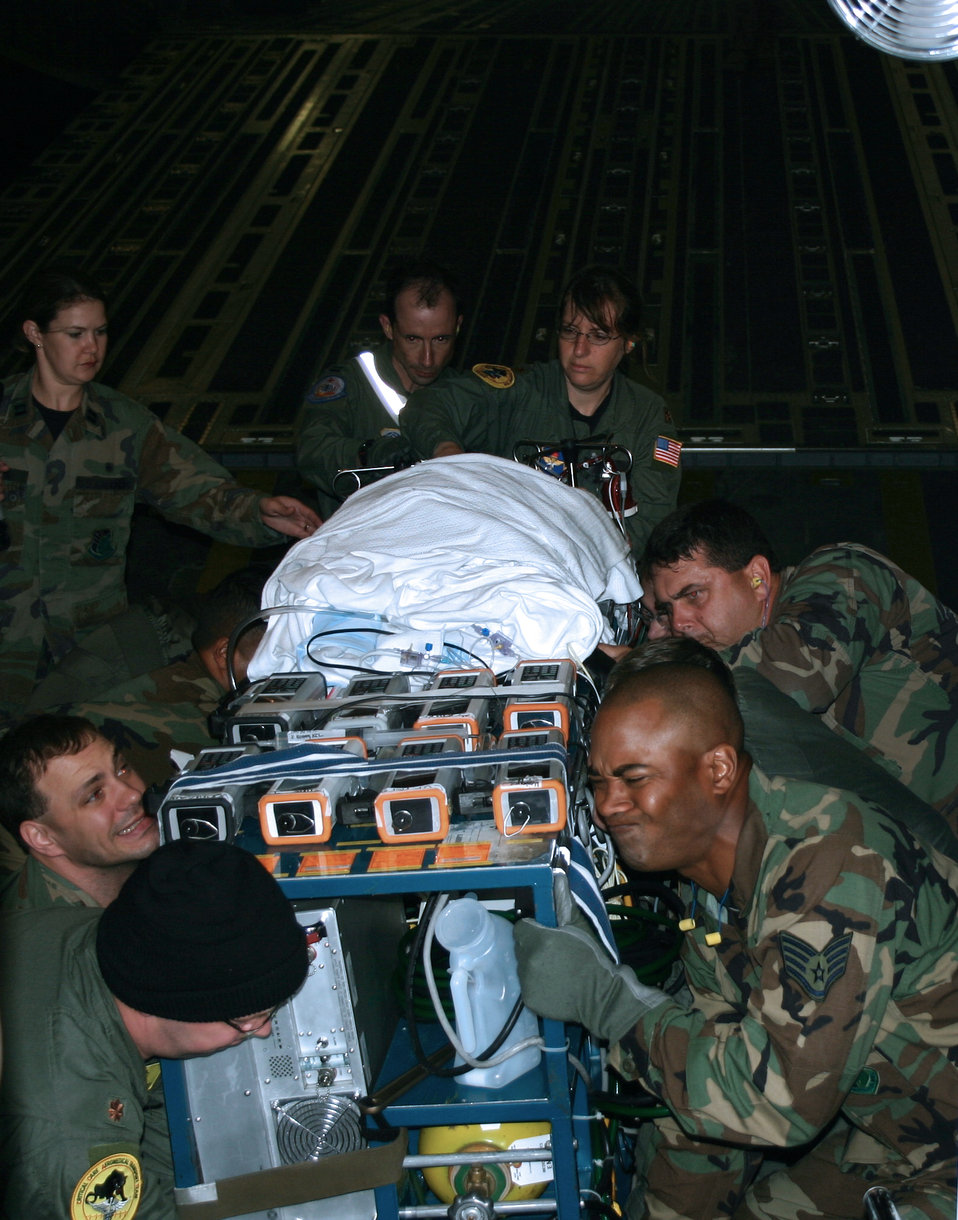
Wilford Hall team flies to Alaska to evacuate infant

SAN ANTONIO -- A medical team from Wilford Hall Medical Center at nearby Lackland Air Force Base moves 10-month-old Carle David and a 900-pound portable heart-lung bypass machine onto an ambulance at San Antonio International Airport on April 28. Carle is diagnosed with a severe case of pneumonia and was medically evacuated from Anchorage, Alaska. Her chance of recovering rose from 10 percent to 90 percent.